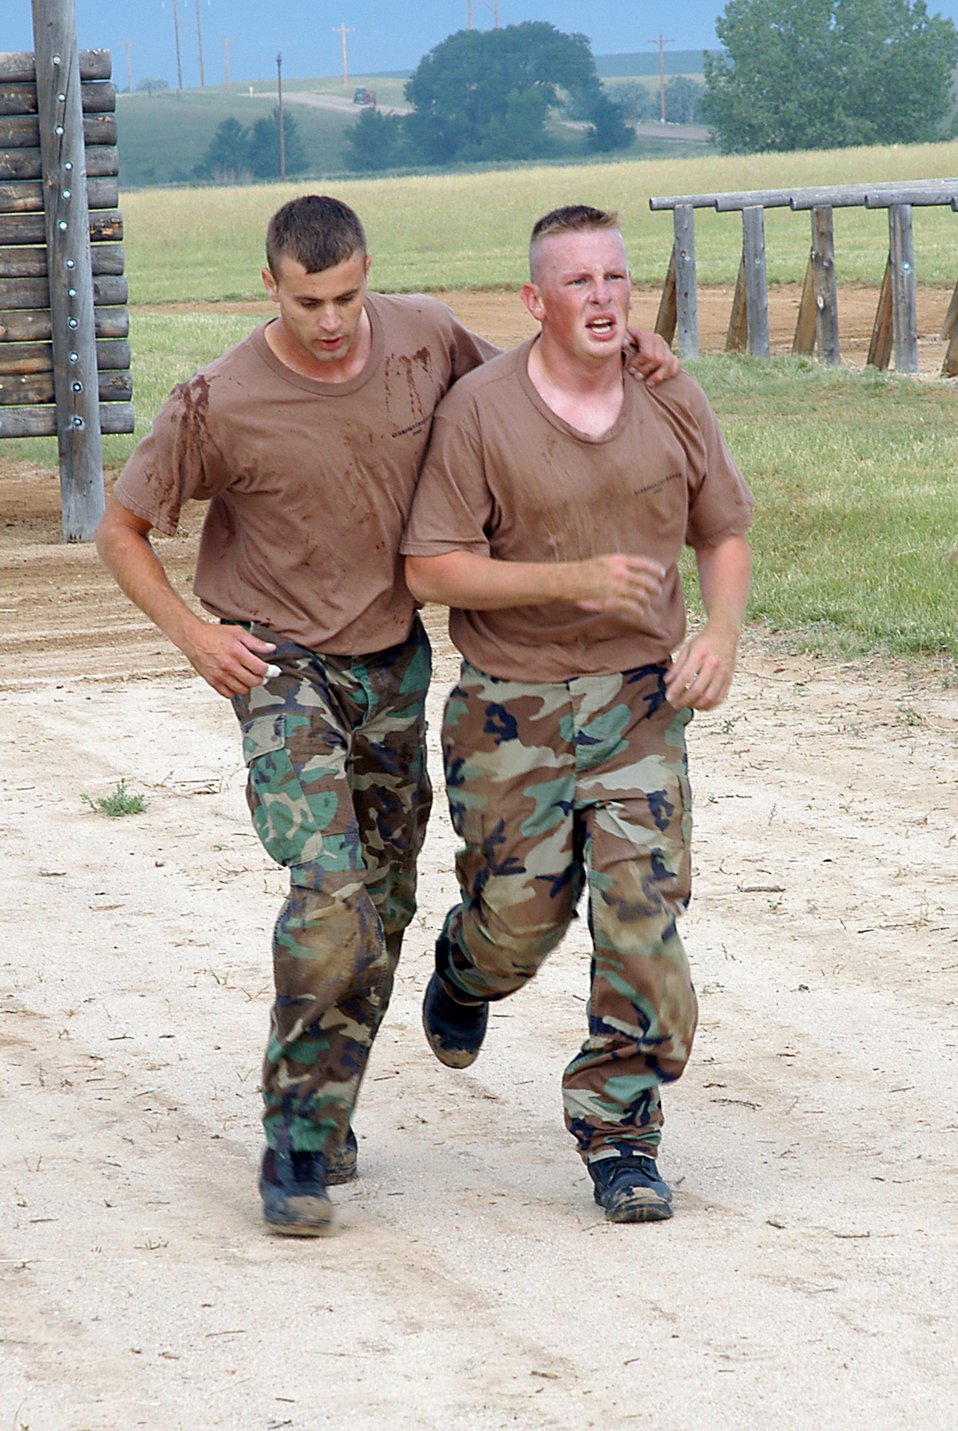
Wingmanship evident at Guardian Challenge

Tech. Sgt. Brian Johnson (left) runs alongside Staff Sgt. Scott Willis at the Guardian Challenge obstacle course Aug. 16. Sergeant Willis injured his ankle during the challenge, but team members stuck together through the end of the course in a display of wingmanship. The NCOs are with the 50th Security Forces Squadron at Schriever Air Force Base, Colo.